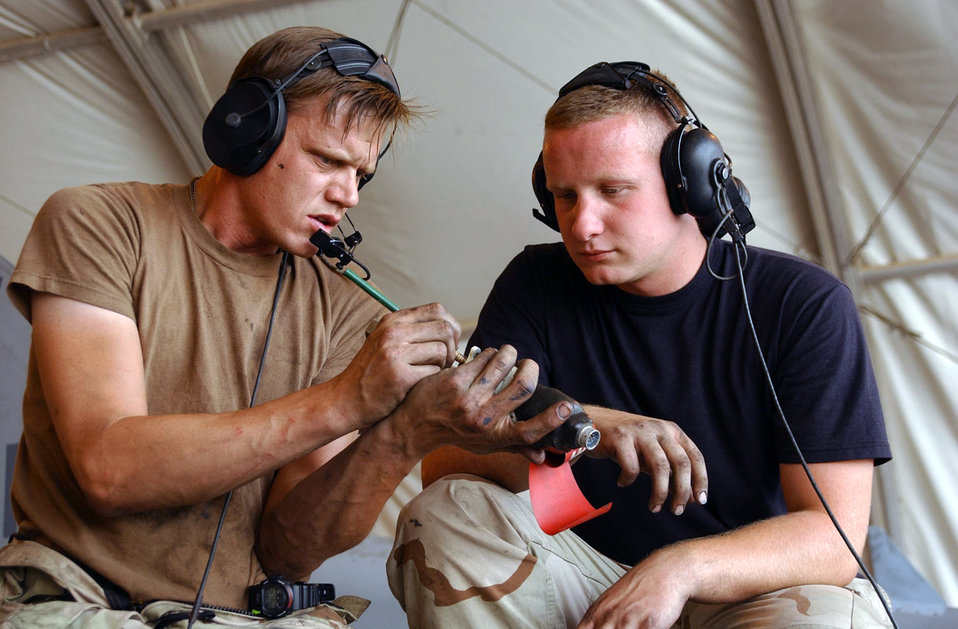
Tricks of the trade

OPERATION IRAQI FREEDOM -- Tech. Sgt. Scott Hooks explains a process to Airman 1st Class Michael Magner during an F-16 fighting Falcon phase inspection. Both airmen are assigned to the 363rd Expeditionary Aircraft Maintenance Squadron and are deployed from Misawa Air Base, Japan.